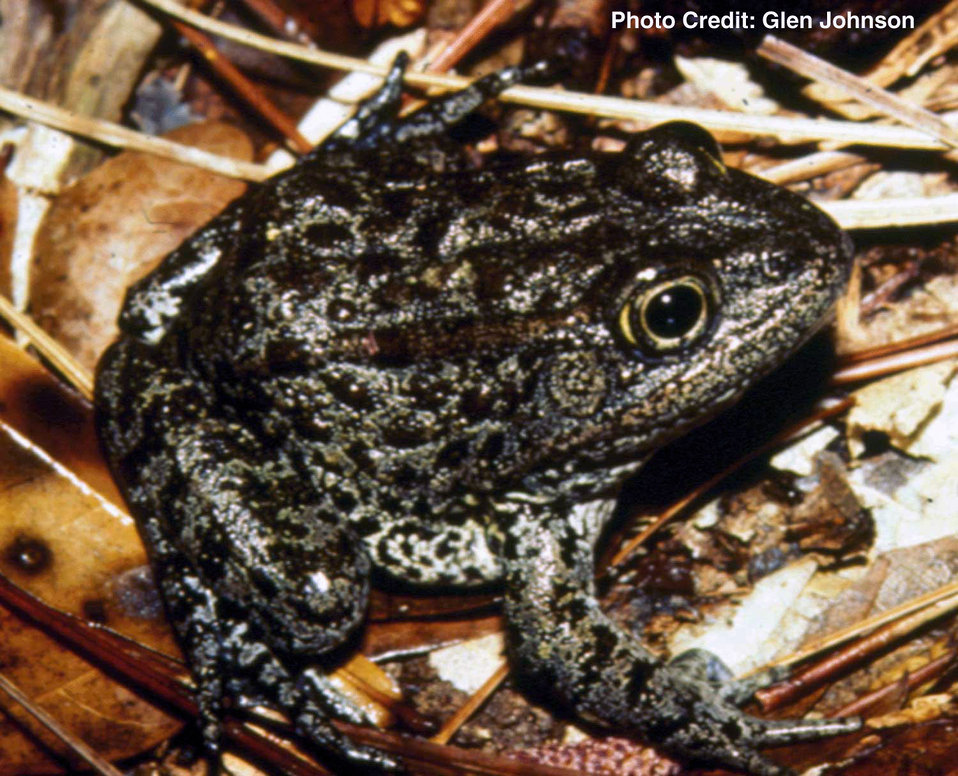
Mississippi gopher frog 'aka' Dusky gopher frog (Rana sevosa)

USFWS Headquarters
Status: Endangered